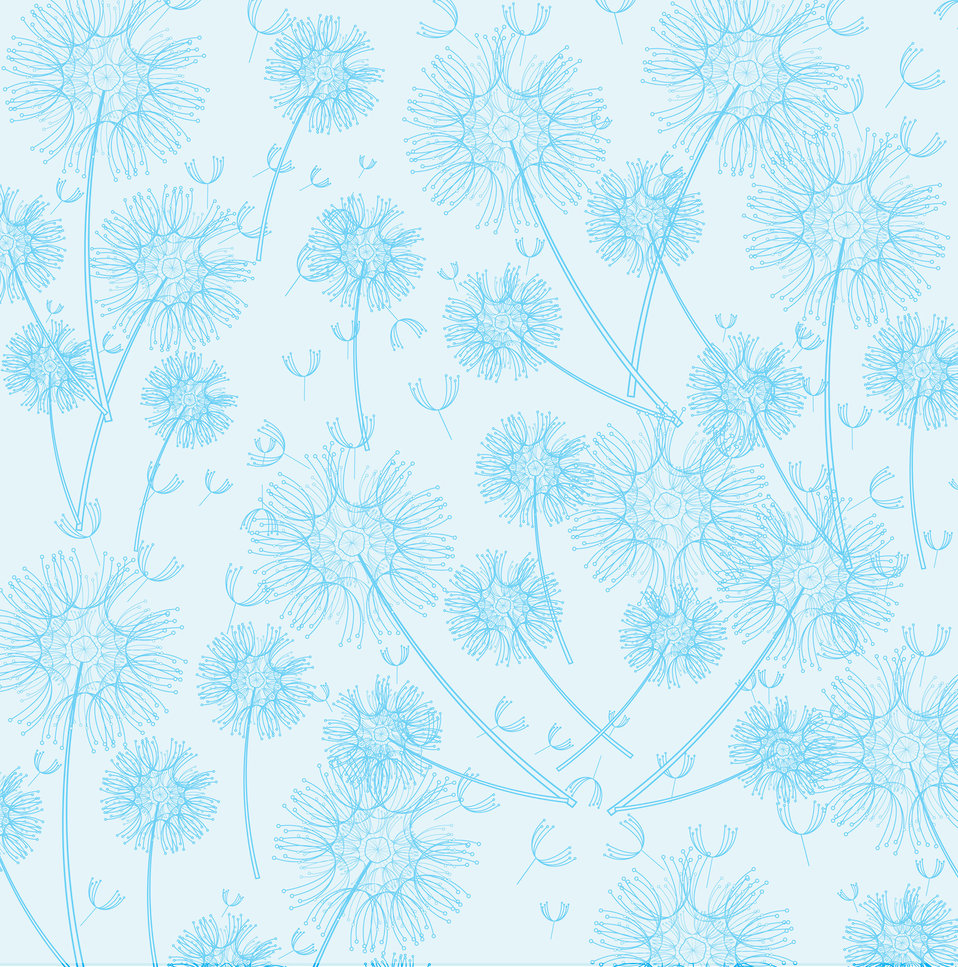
Dandelion wallpaper background

Blue dandelions wallpaper background for scrapbooking.